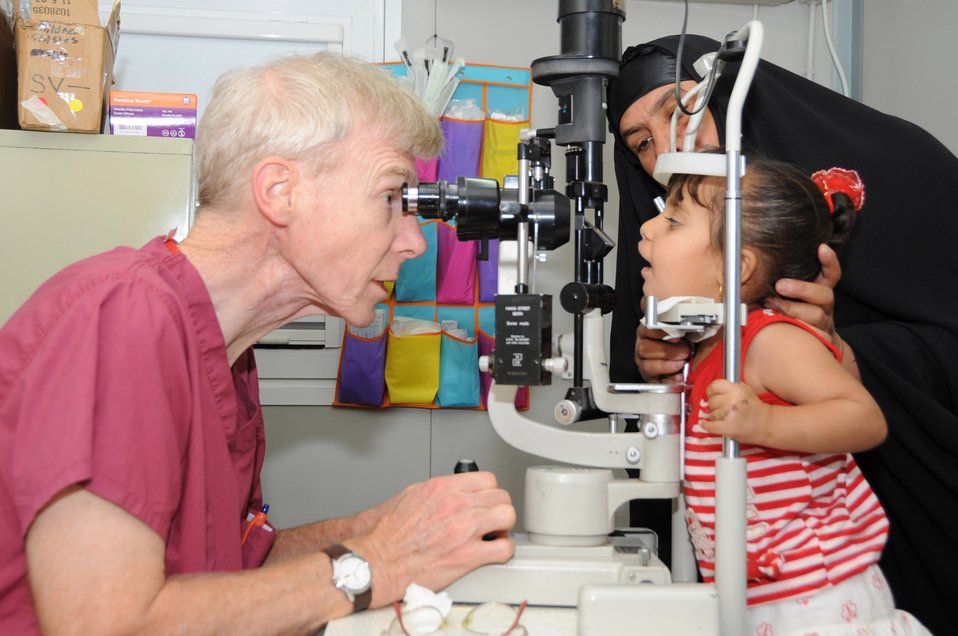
Visionary doctor helps hundreds of Iraqis

Retired Colonel Stephen Waller, a contract ophthalmologist from Wilford Hall Medical Center, Lackland Air Force Base, Texas, performs a routine eye exam on a young Iraqi child here May 20. The doctor came to Iraq to provide eye exams, surgeries and free glasses to hundreds of Iraqis in need. Doctor Waller arrived here May 18 and finished his humanitarian mission four days later.